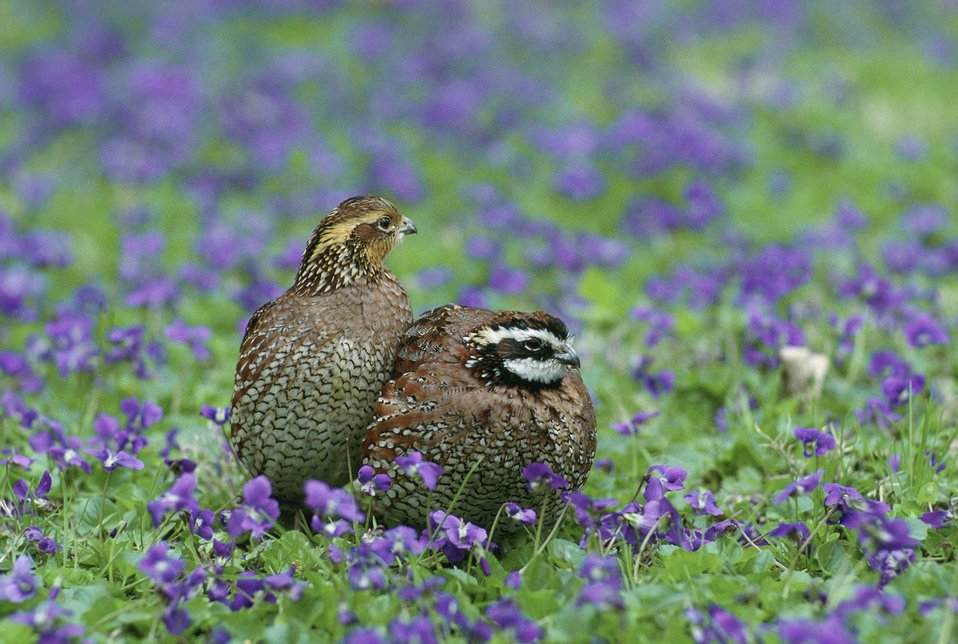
northern bobwhite quail